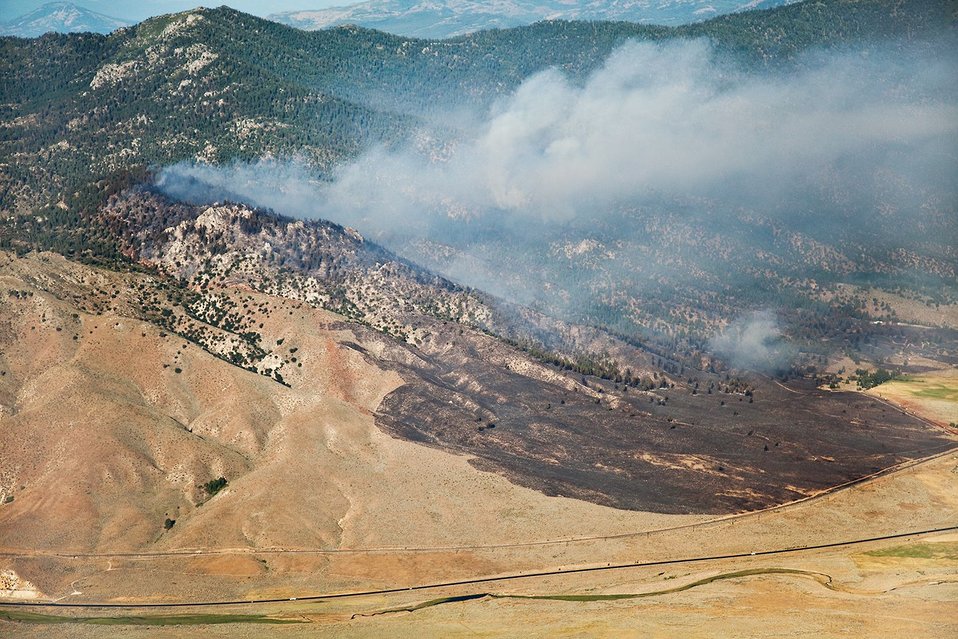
Constantia Fire

Cheatgrass helped fuel the Constantia Fire in Long Valley, CA, in July 2010.